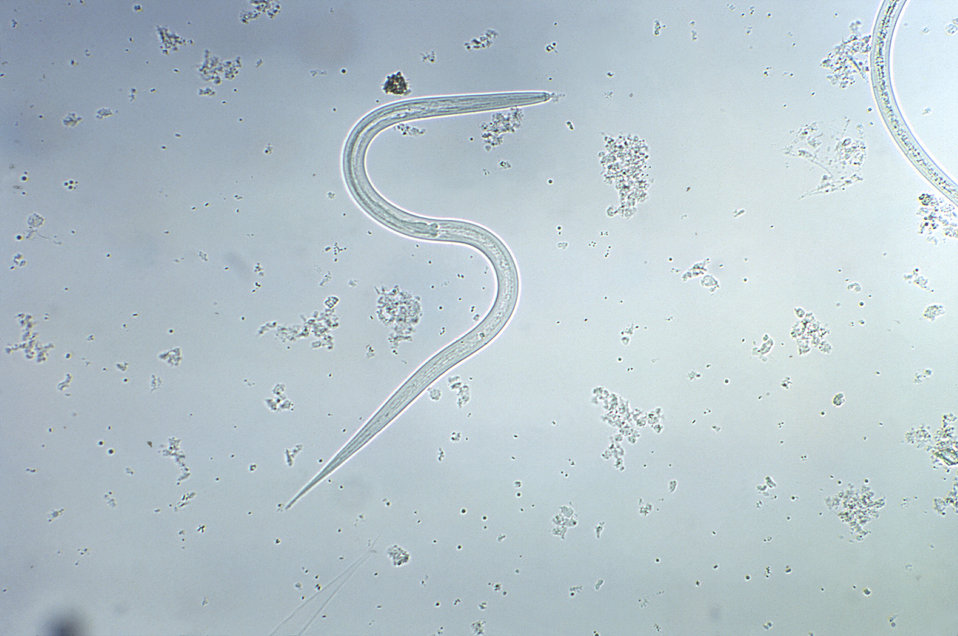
Under a magnification of 128X, this photomicrograph revealed the presence of a number of Strongyloides sp filariform larval-staged organisms. Infective, third-stage filariform larvae (L3) of Strongyloides stercoralis are up to 600�m long. The tail is notched (see PHIL 1509, under higher magnification), and the esophagus to intestine ratio is 1:1. Infective L3 larvae are found in soil and invade the human host by direct penetration of the skin. They may be found in respiratory specimens during cases of autoinfection.